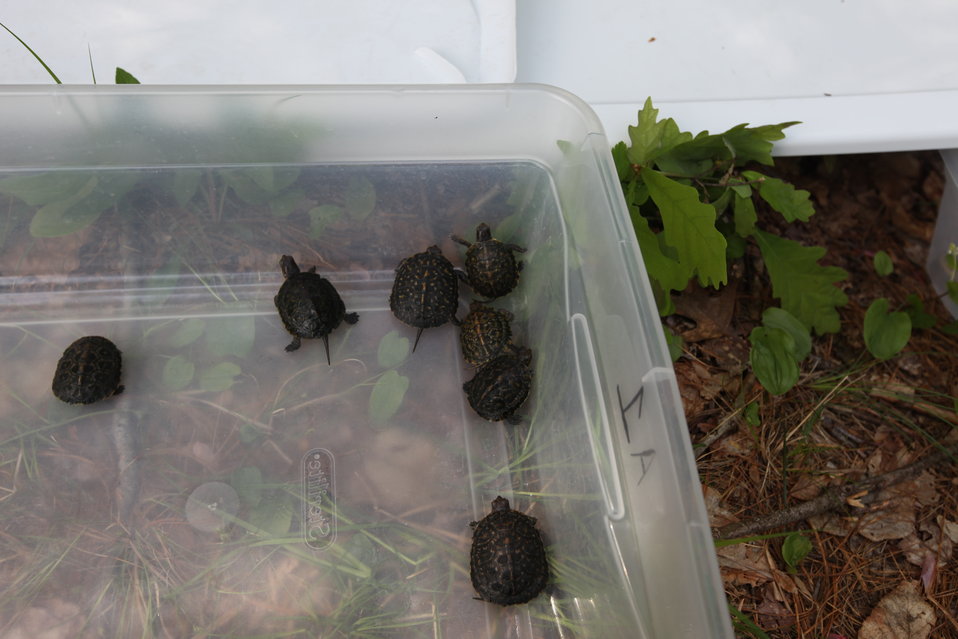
Turtles Ready to be Released

Blanding's turtle release, Assabet River, MA.